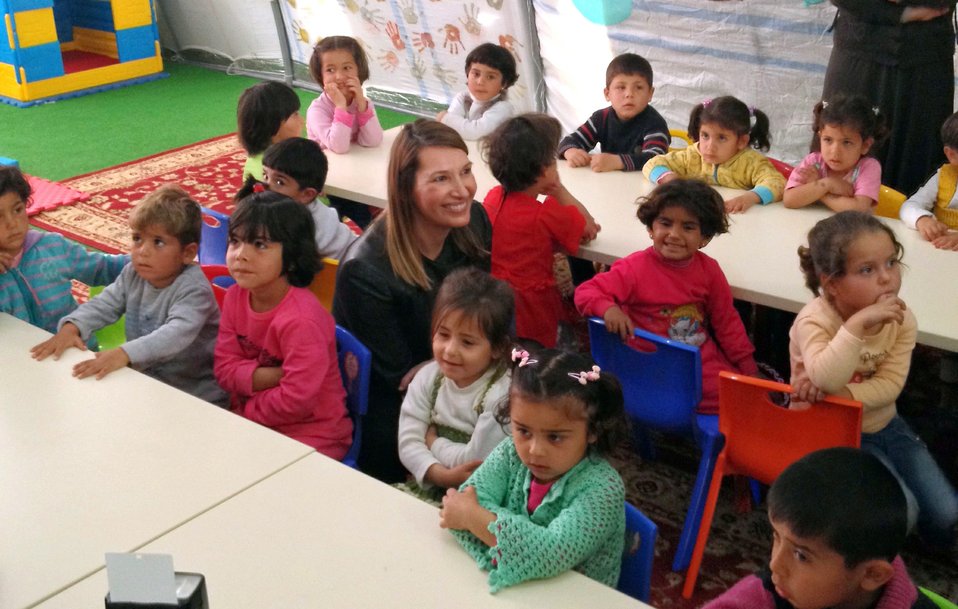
Deputy Secretary Higginbottom Speaks With Syrian Refugee Children

Deputy Secretary of State for Management and Resources Heather Higginbottom speaks with Syrian children in a classroom at a Syrian Refugee Camp outside of Adana, Turkey, on March 21, 2014.